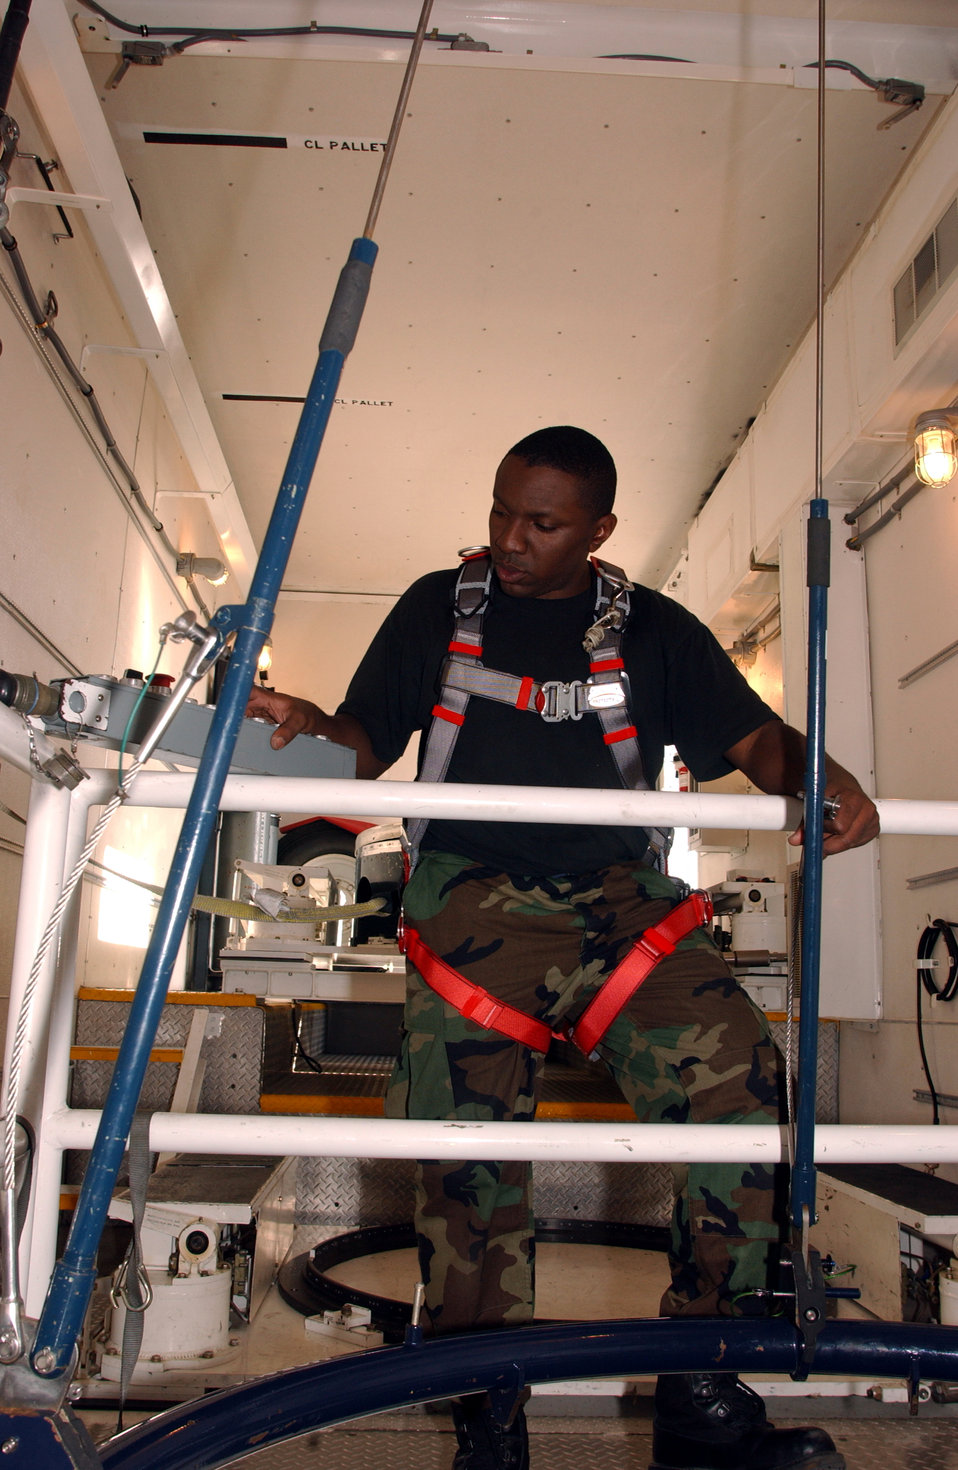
Starting the 'Challenge'

VANDENBERG AIR FORCE BASE, Calif. -- Staff Sgt. Rhaspede Logan controls a hoist above a silo during the missile maintenance team exercise portion of Guardian Challenge here May 4. He is assigned to the 91st Space Wing at Minot Air Force Base, N.D. Guardian Challenge, the world's premier space and missile competition, is a four-day event held annually. It tests the wartime readiness of Air Force Space Command's Airmen in spacelift, ICBM operations, communications, maintenance, helicopter operations, security forces and chef food preparation.